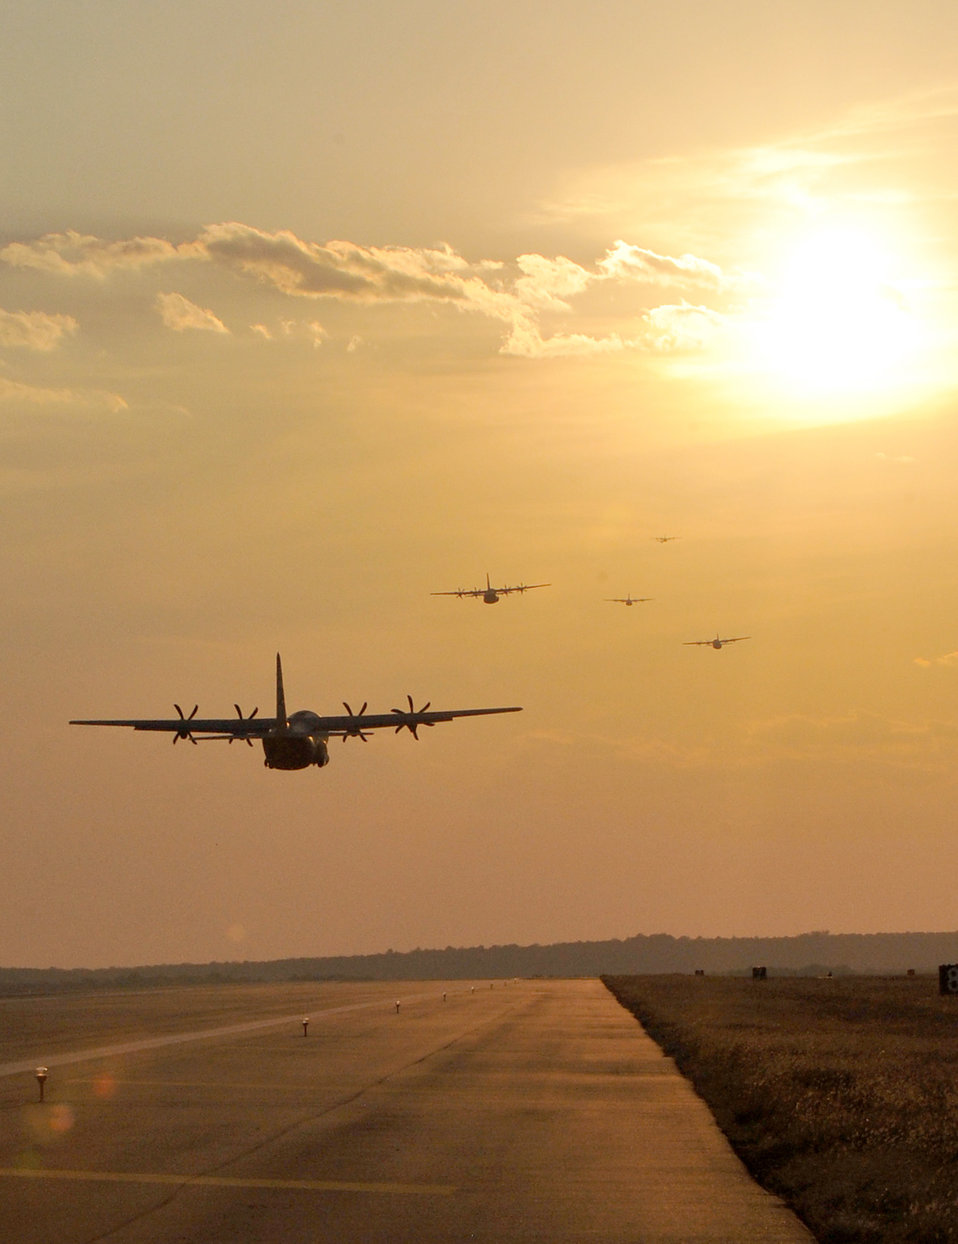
A flock of transport birds

A group of C-130 Hercules takes off from the flightline at Little Rock Air Force Base, Ark., Oct. 18, 2010, to participate in a Joint Readiness Training Center exercise. In the exercise with the Army, 26 C-130s will fly to Alexandria, La., to pick up approximately 1,700 Army paratroopers of the 82nd Airborne Division's 3rd Brigade.